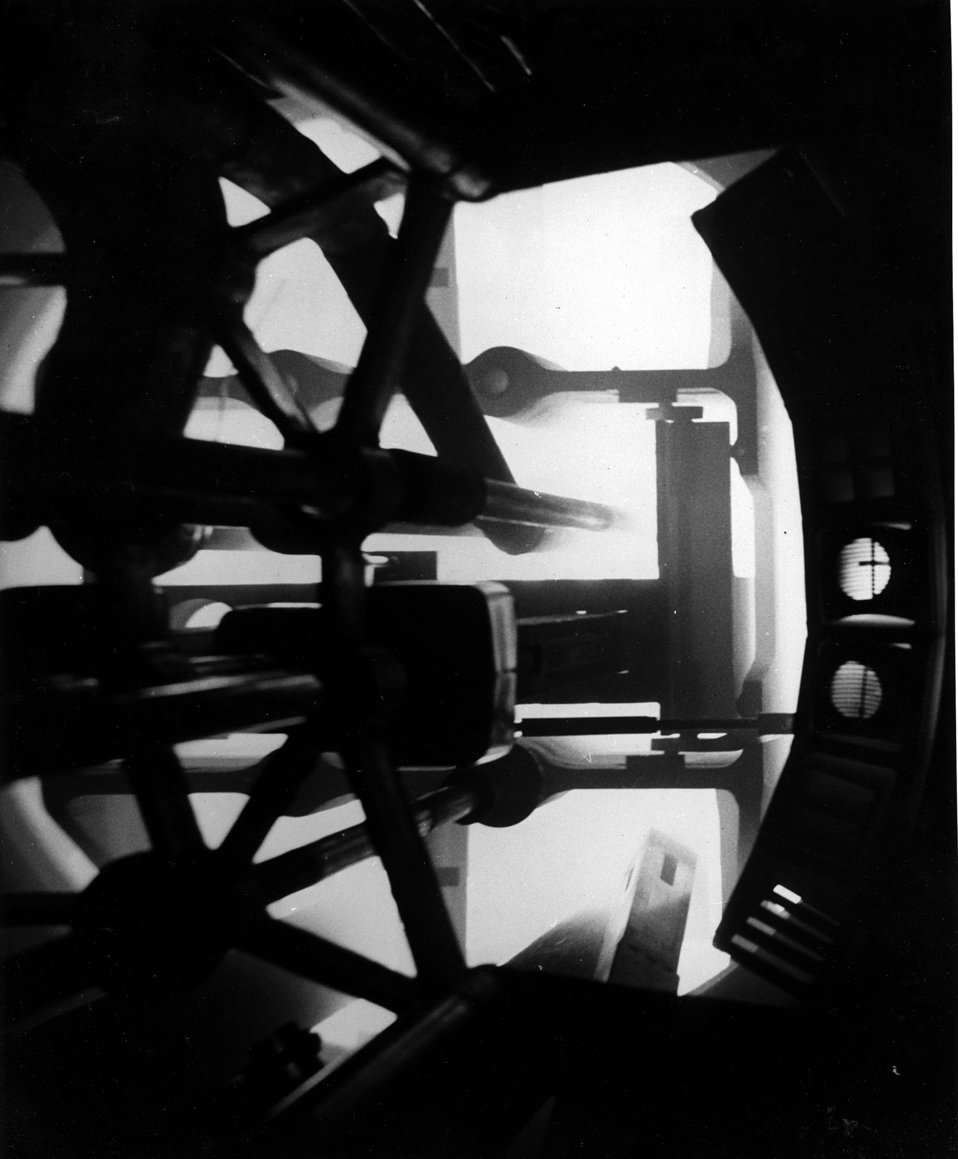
Core of the Low Intensity Test Reactor at Oak Ridge National Laboratory. c. 1961